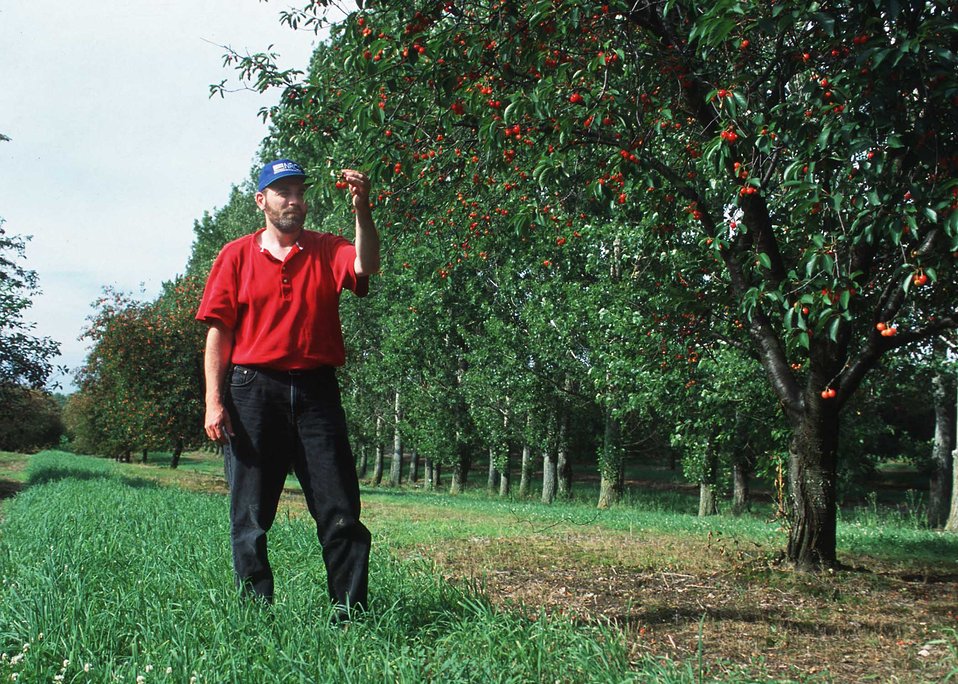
Engineer Fred Gasper stands in cherry orchard with windbreak. VanBuren County, Michigan.